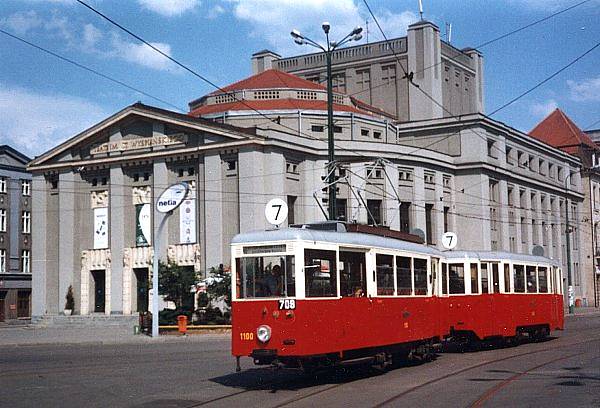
Museum n Katowice, Poland. Konstal N 4ND tram (#1100).